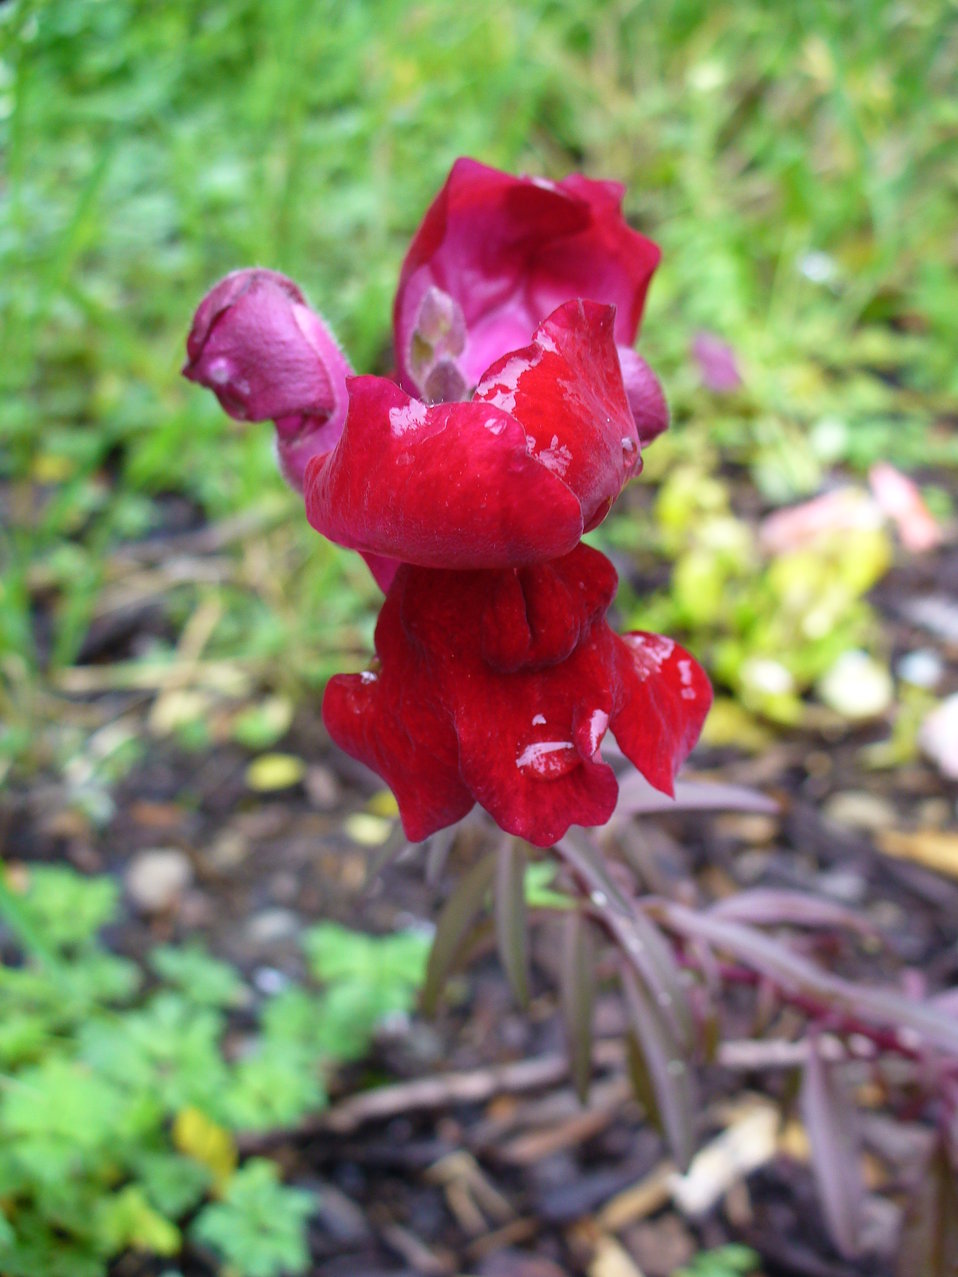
I am the originator of this photo. I hold the copyright. I release it to the public domain. This photo depicts a flower.